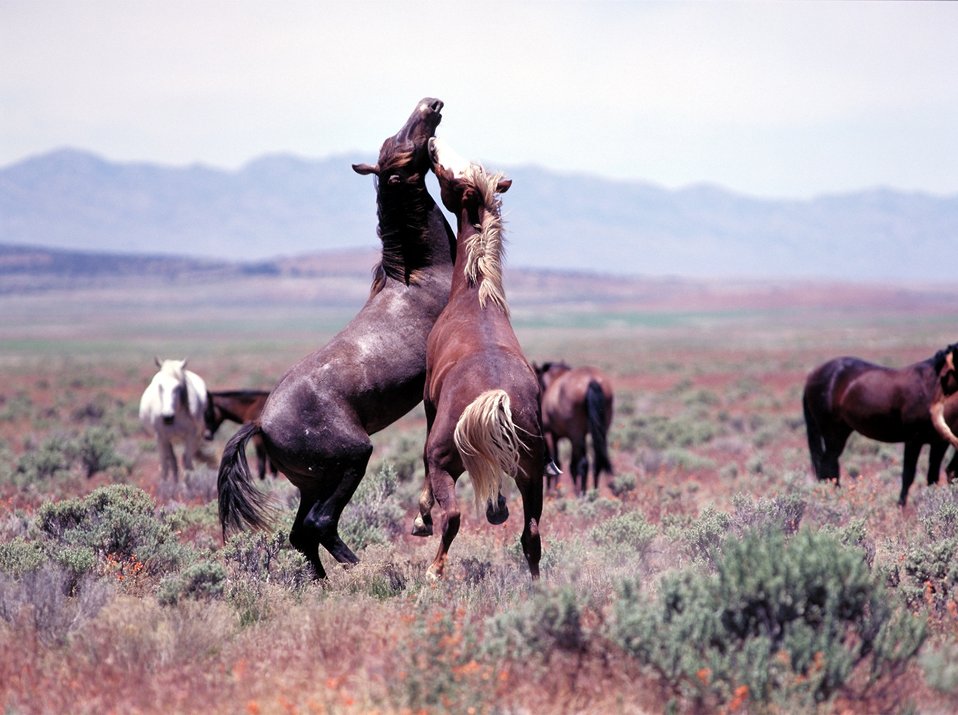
Onaqui Herd near Dugway, Utah.